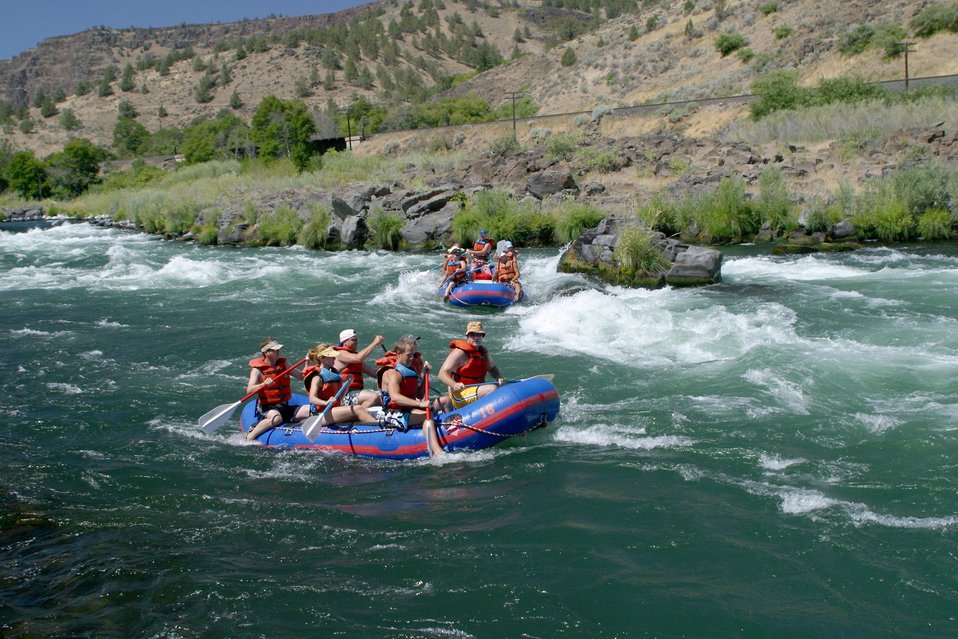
Wapinitia Rapids class III, has large roller coaster waves. 7/26/03 Pelton Dam 3600 cfs: Moody Rapids 4300 cfs.